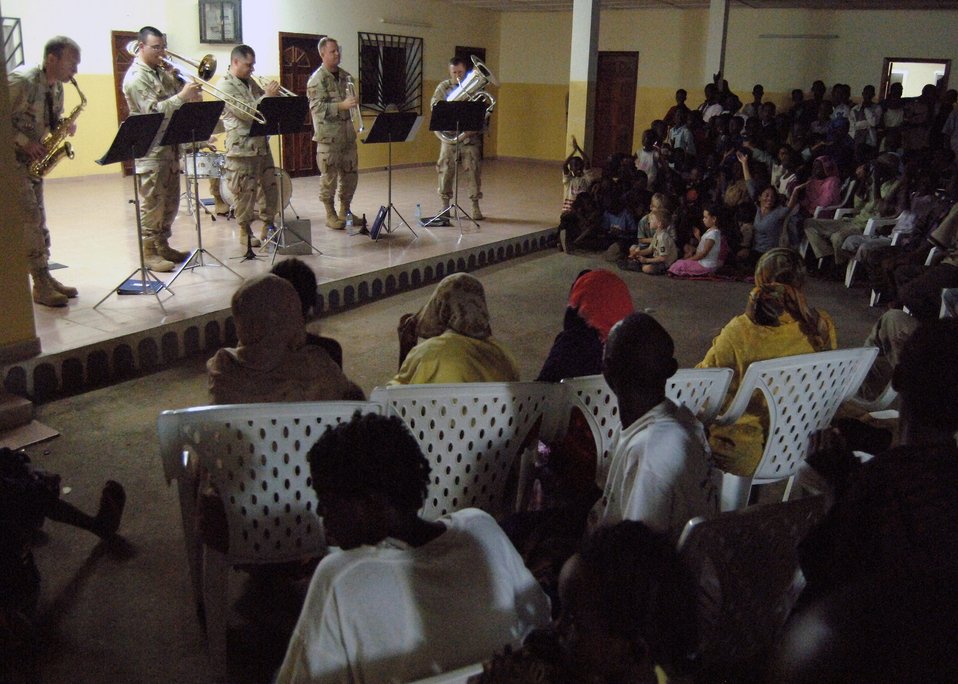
Djiboutians delight in the sounds of 'Hot Brass'

U.S. Central Air Forces Expeditionary Band,